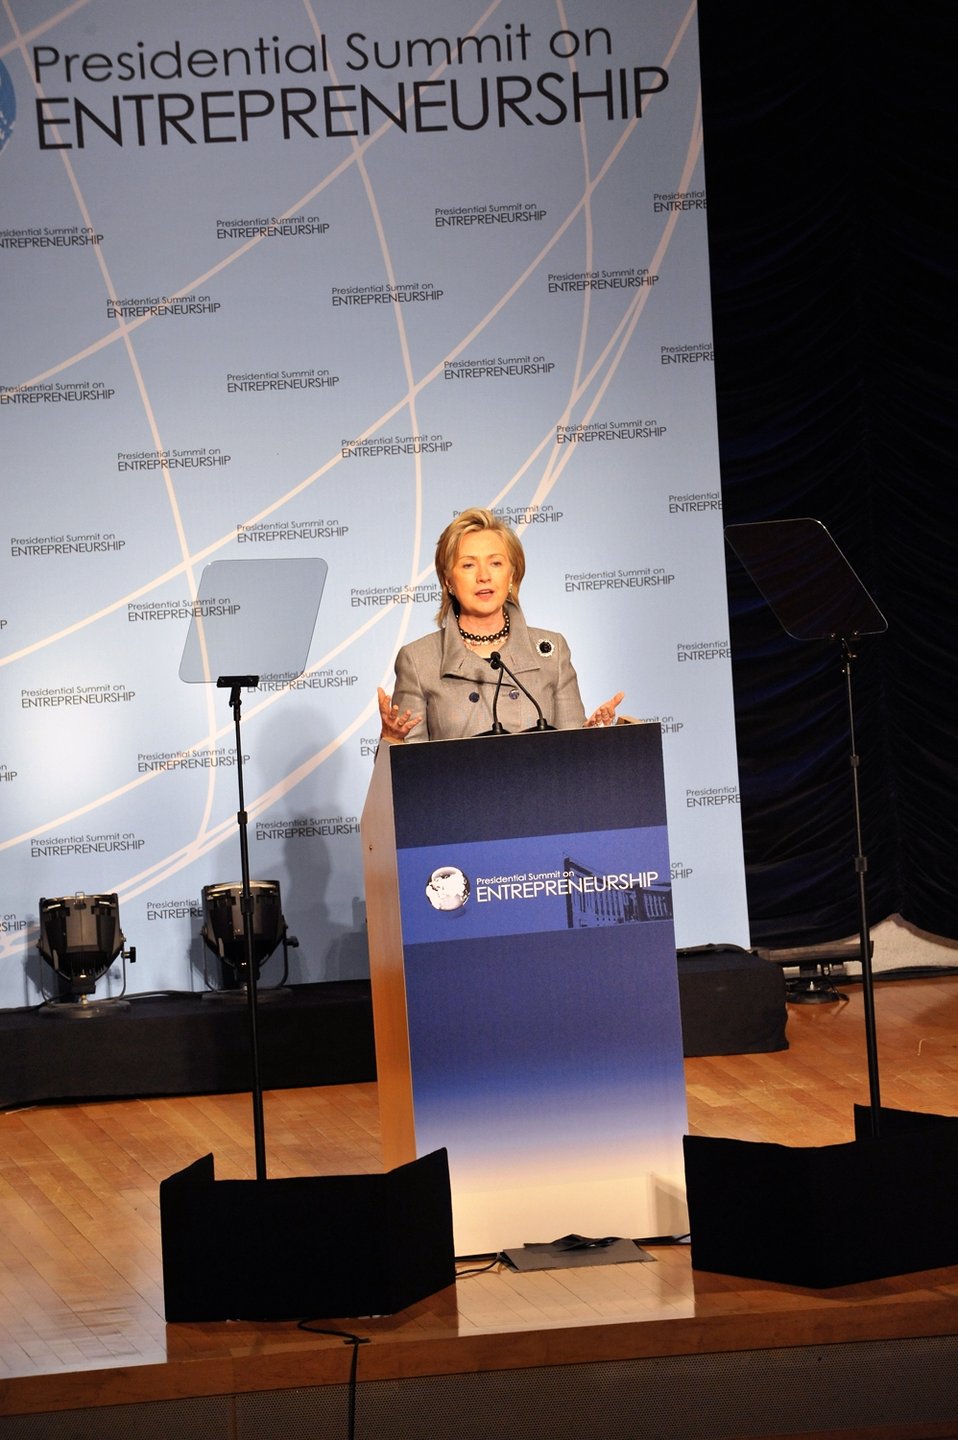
Secretary Clinton Addresses Presidential Summit on Entrepreneurship

U.S. Secretary of State Hillary Rodham Clinton delivers remarks at the 2010 Presidential Summit on Entrepreneurship, Washington, D.C., April 27, 2010.